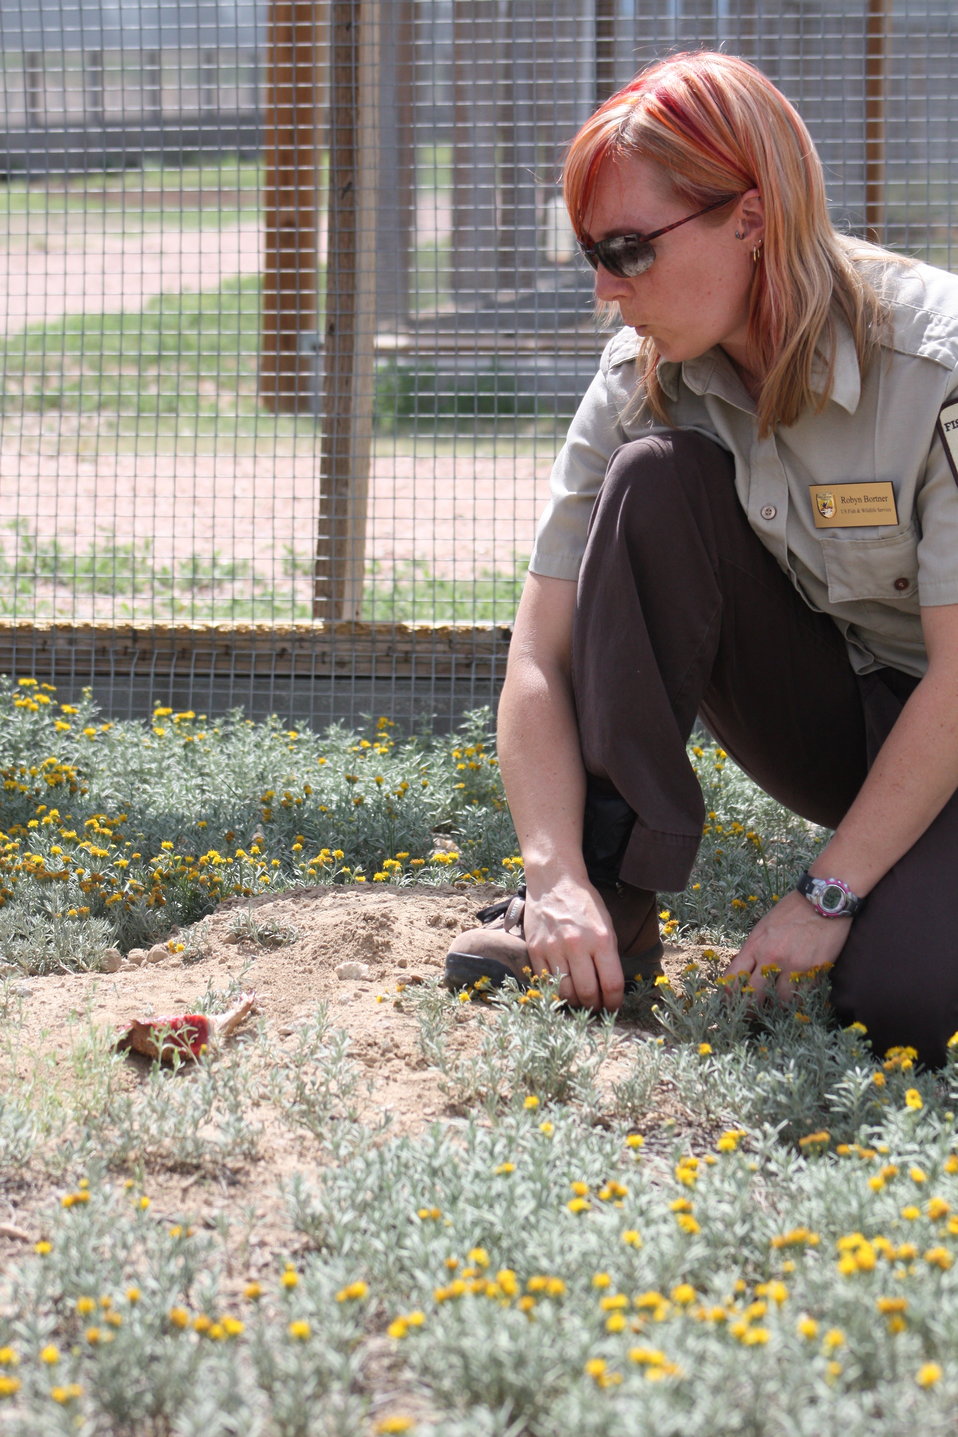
Interns visit the NBFFCC

In the summer of 2012, USFWS Region 6 interns visited the National Black-footed Ferret Conservation Center (NBFFCC) in Colorado to learn how the program reintroduces the endangered Black-footed ferret back into its native habitat.

In this photo, Robyn Bortner (NBFFCC Biologist) feeds the ferrets in their outdoor preconditioning pens!